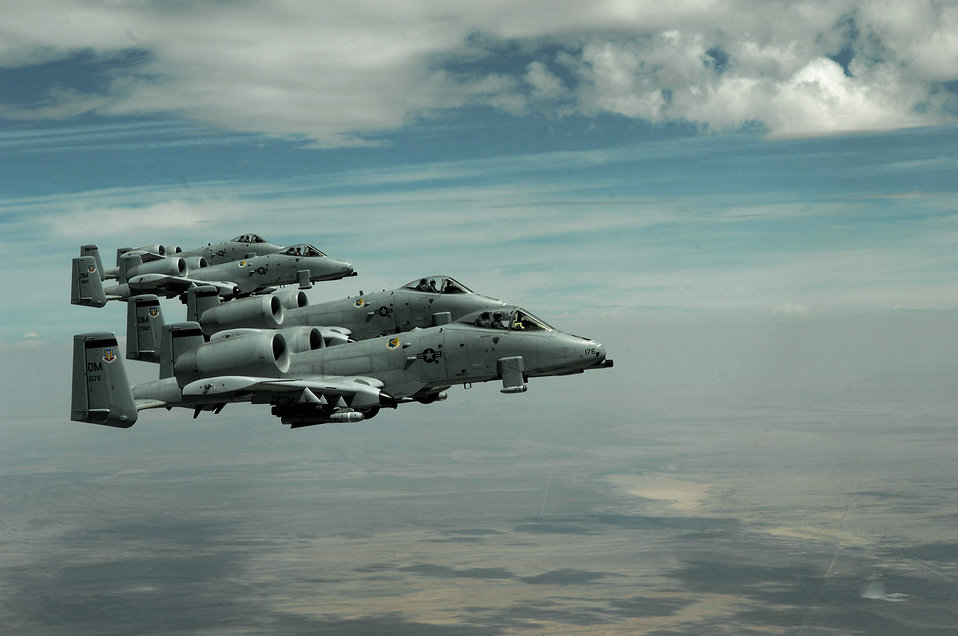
Soaring over Arizona

Four A-10 Thunderbolt IIs from the 355th Fighter Wing at Davis-Monthan Air Force Base, Ariz., fly in formation over Arizona April 29. The A-10s received in-flight refueling from a KC-135 Stratotanker from the Arizona Air National Guard's 161st Air Refueling Wing based in Phoenix.